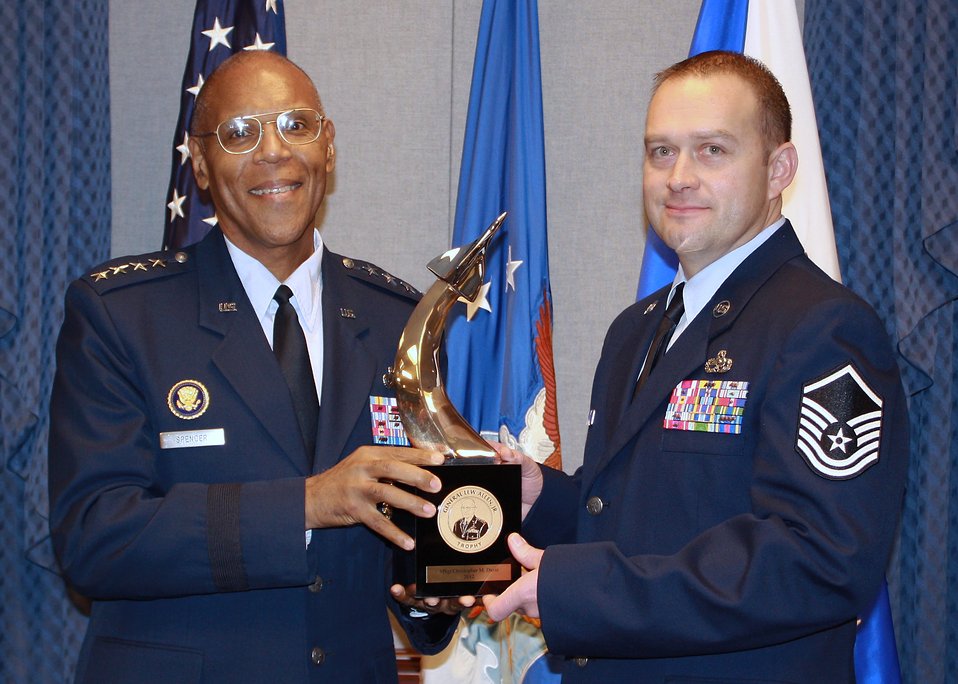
Lew Award

Air Force Vice Chief of Staff Gen. Larry Spencer presents the Gen. Lew Allen Jr. Award to Master Sgt. Christopher Davis during a ceremony in the Pentagon on Oct. 31, 2012.